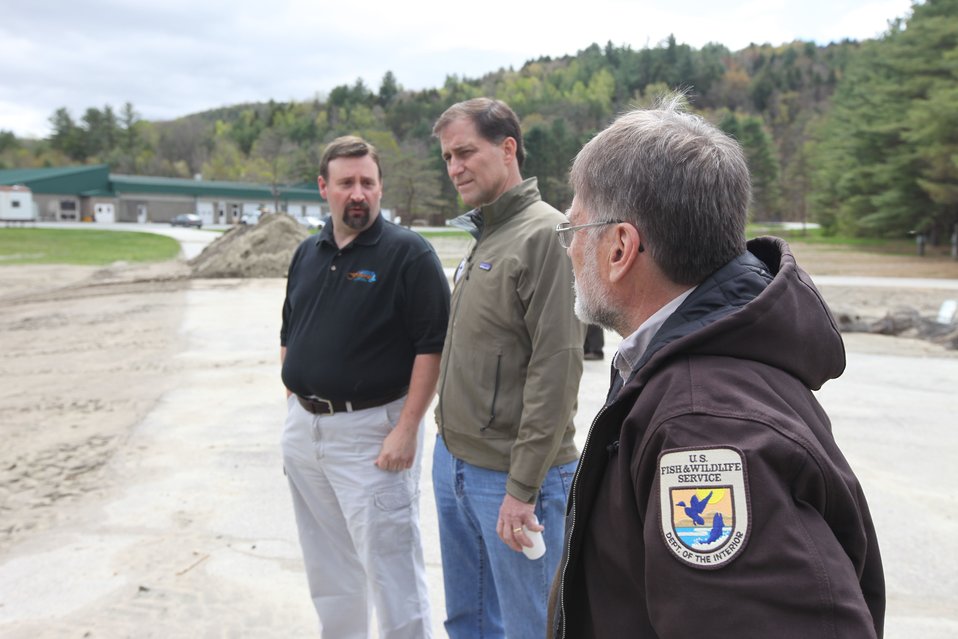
Wade Jodun, Dan Ashe & Ken Gillette

U.S. Fish & Wildlife Service Director Dan Ashe visits the Northeast Region
for a tour of the White River National Fish Hatchery in Bethel, Vermont on
April 27, 2012. The hatchery was devastated by Tropical Storm Irene and
Dan Ashe had the chance to meet and thank the staff for their heroic work.
Director Ashe also visited restoration/flood response/fish passage project
sites in Rochester, Vermont and met with local officials and staff from the
White River Partnership.